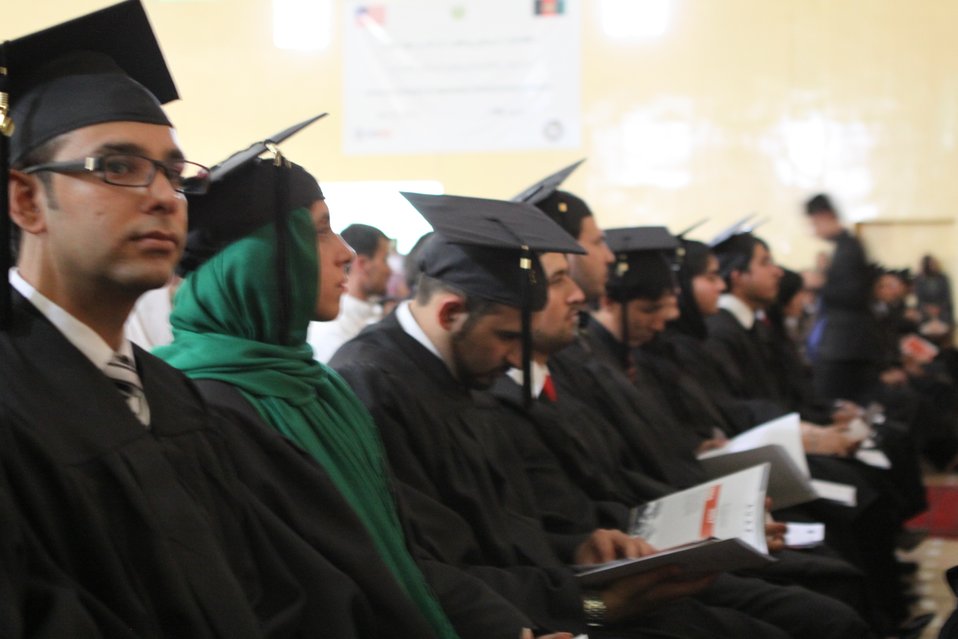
100526 AUAF Graduation 189